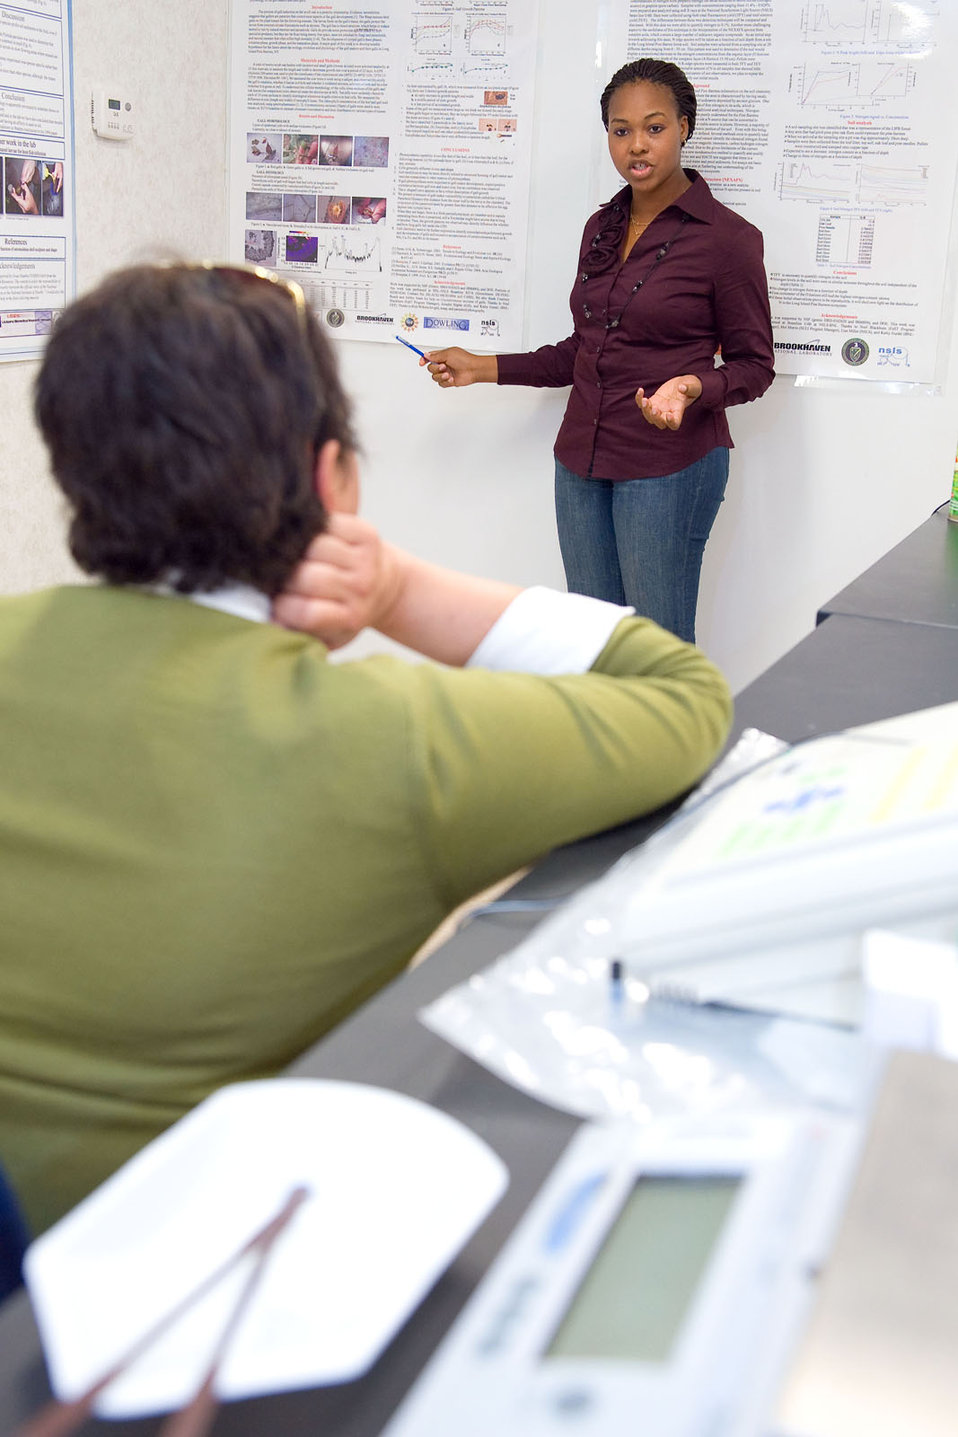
November, 2009 EPA Administrator Lisa Jackson learns about student projects firsthand